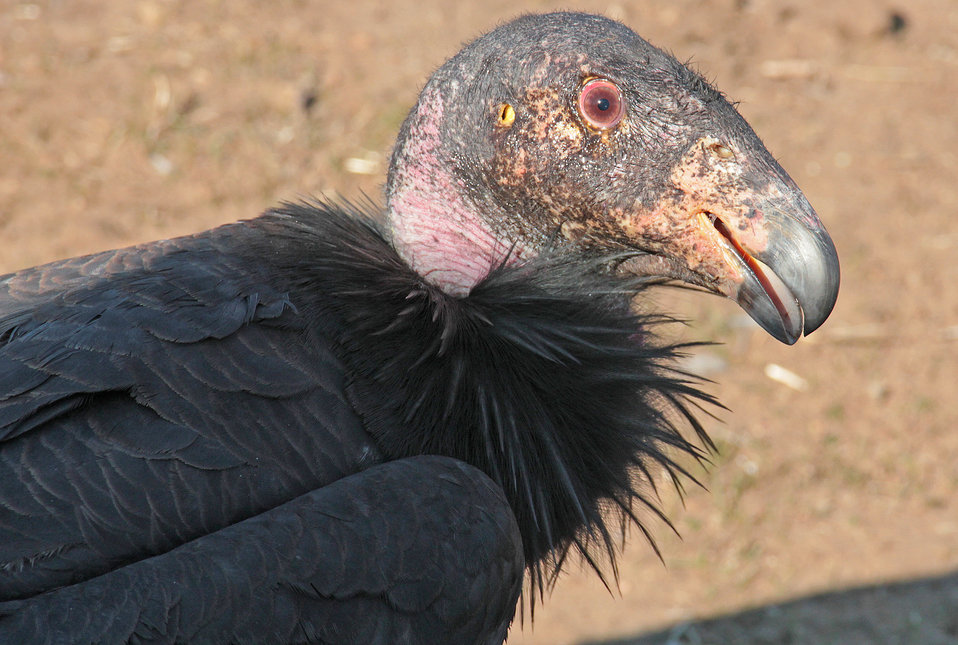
Calfornia condor SF1868 11-2011

California condor at Bitter Creek National Wildlife Refuge, November 2011.